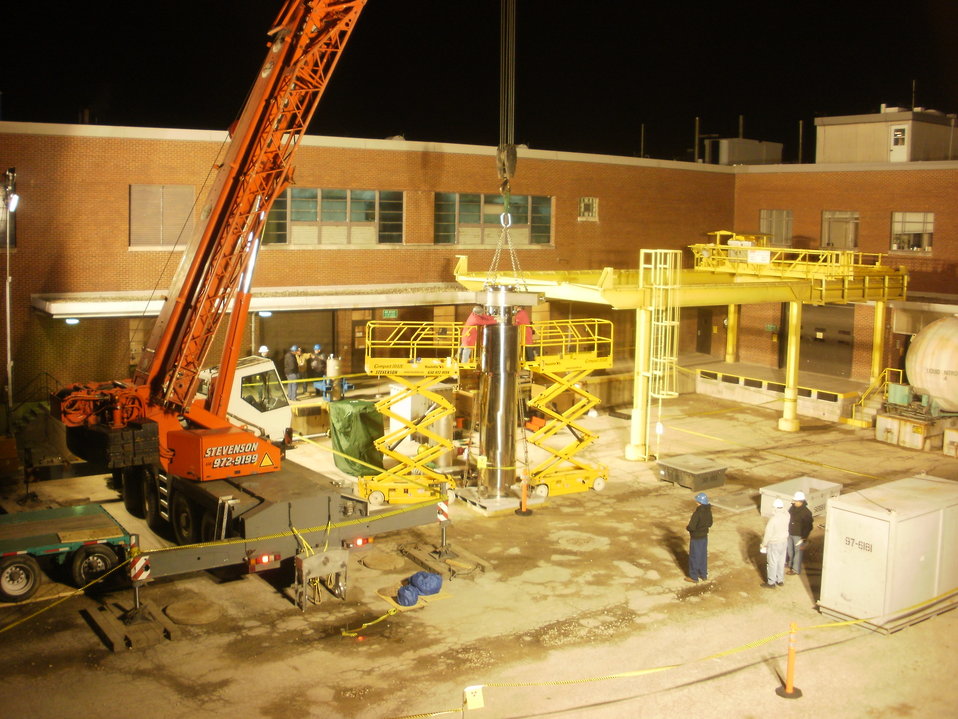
Argonne Forges Ahead in Waste Removal, Facility Demolitions with Recovery Act Help

With the help of $79 million from the Recovery Act, Argonne National Laboratory continues to dramatically reduce its inventory of radioactive materials and waste while making significant progress in its decontamination and demolition (D&D) program.